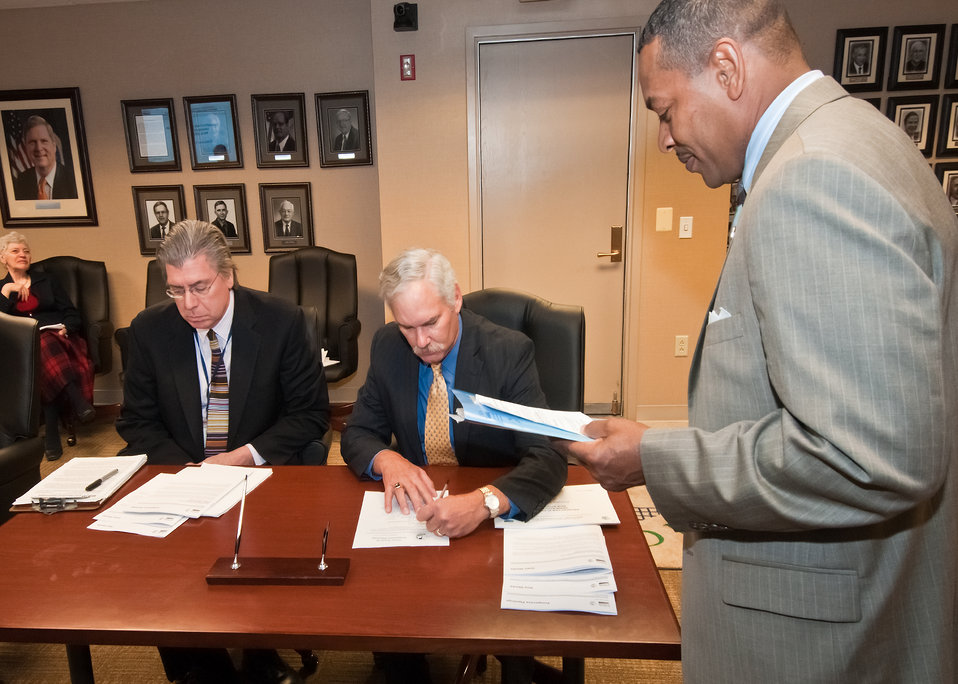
Dr. Joseph Glauber (left), Chief Economist, Michael Scuse (center), Undersecretary, Farm and Foreign Agricultural Services and Hubert Hamer, Chairman Agricultural Statistics Board sign the United States Department of Agriculture, National Agricultural Statistics Service March Agricultural Survey. Undersecretary Scuse signed as the Secretary of Agriculture’s designee releasing the information in Washington, DC, Thursday, March 31, 2011. The NASS lockup is agricultural commodity information held until the Secretary of Agricultural or Secretary’s Designee has signed and released the information. The signing is the official act of recognizing the information as an official USDA document.